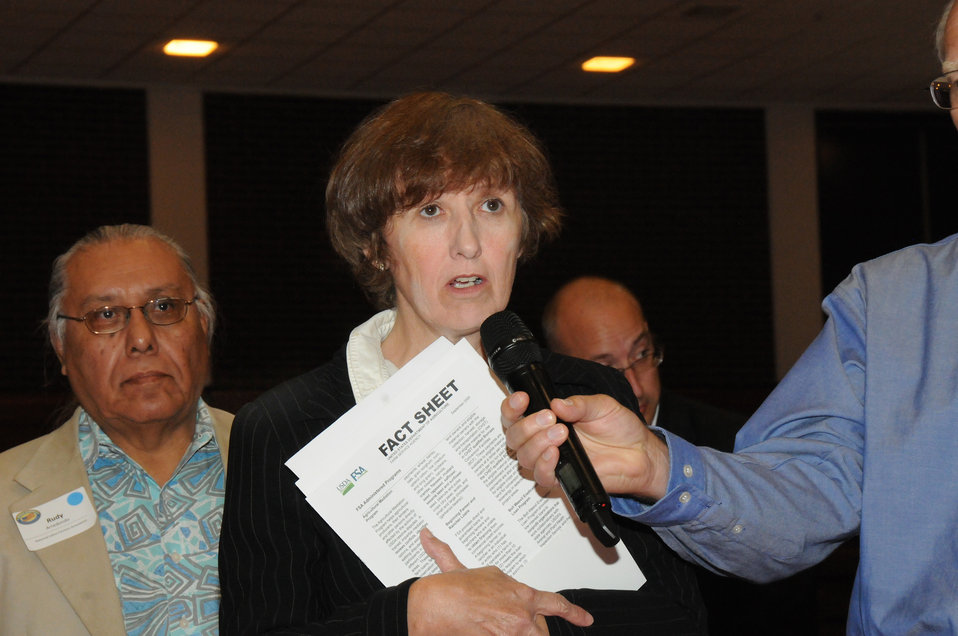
A Dialogue on Rural America was the first discussion panel held at the National Rural Summit held at Jefferson College in Hillsboro, MO., on Thursday, June 3, 2010. Audience participants line up to ask questions of the panelists. USDA photo 10di1386-0247.